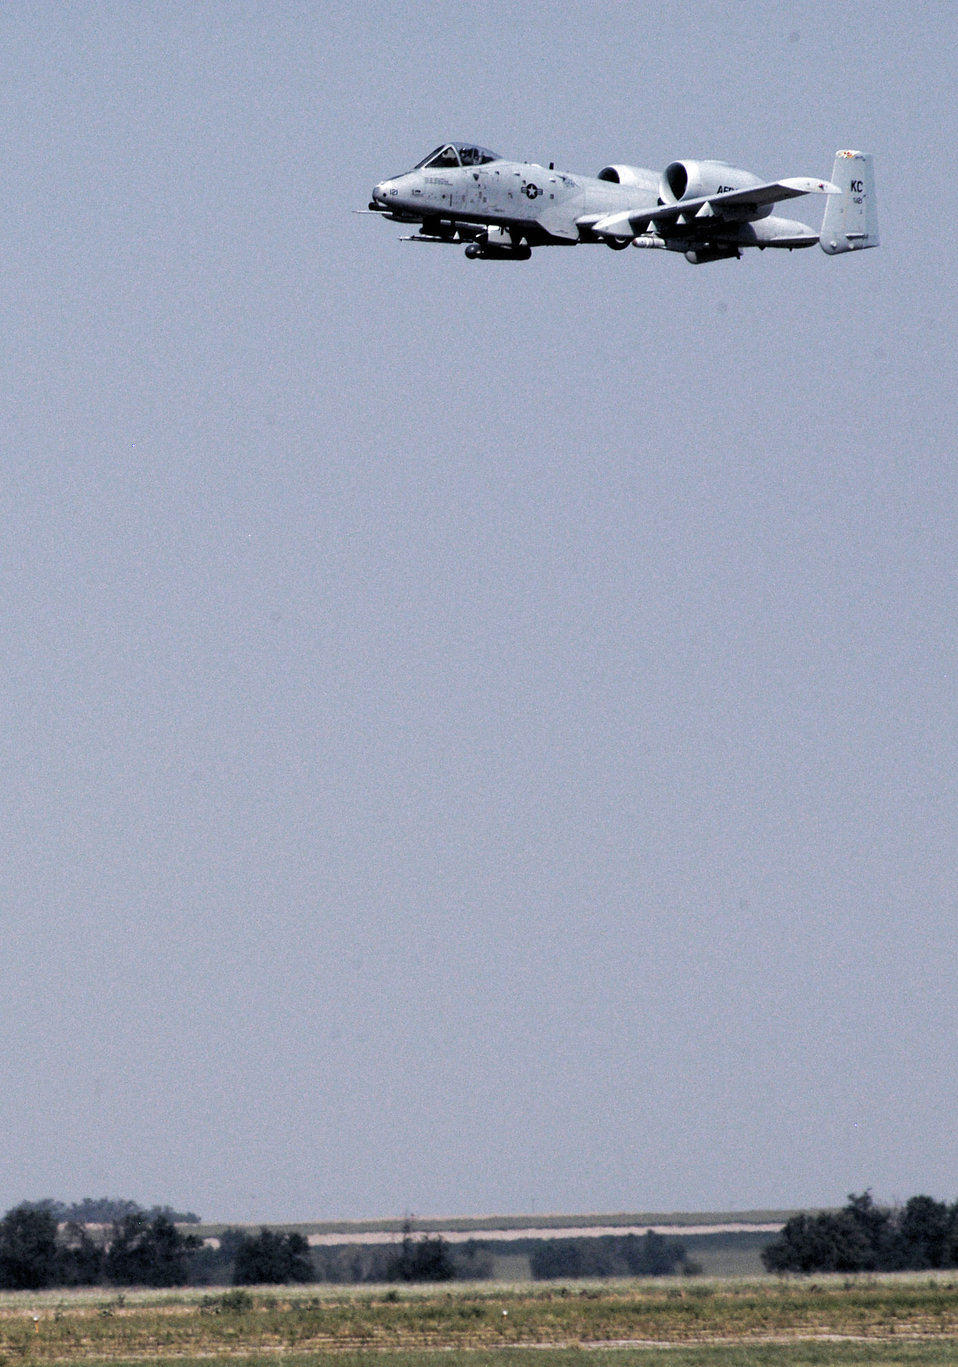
Hawgsmoke 2008

Twenty-five to 30 A-10 Thunderbolt IIs, like this one, will participate in Hawgsmoke 2008 in Salina, Kan., Oct. 15 to 18, despite an Air Force time-compliance technical order issued Oct. 3 to inspect for wing cracks on 130 of the service's almost 400 A-10 aircraft. Hawgsmoke is an Air Force A-10 bombing and gunnery competition held every two years.